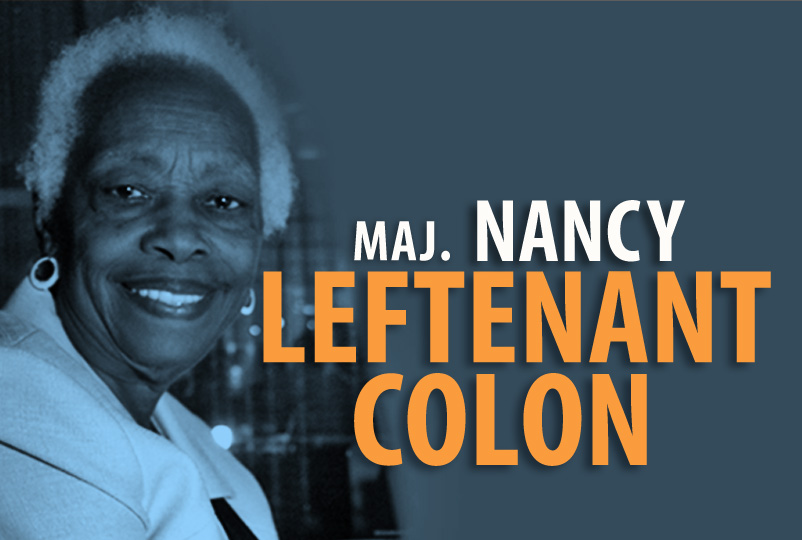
Maj. Nancy Leftenant-Colon